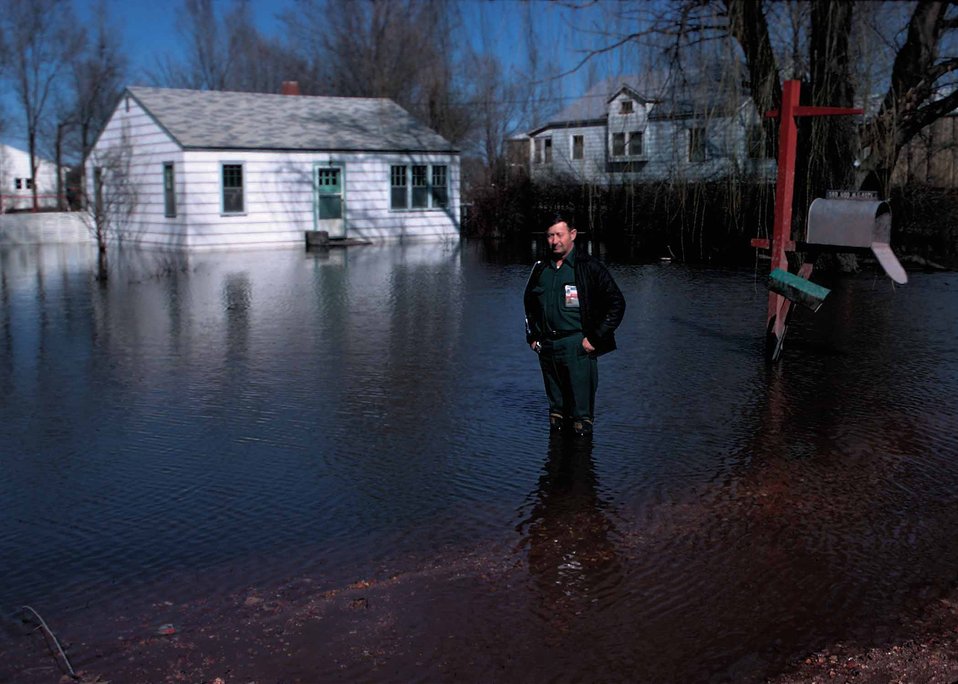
Flooding in low-lying area in Des Moines, Iowa. The area floods frequently. A soil survey shows soils with a tendency for frequent flooding.